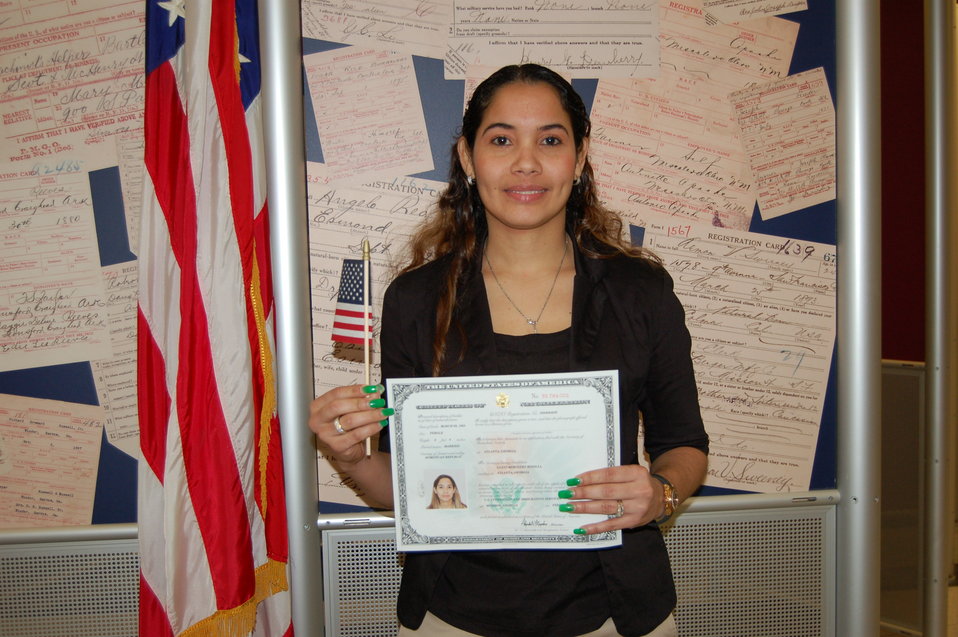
New Citizens